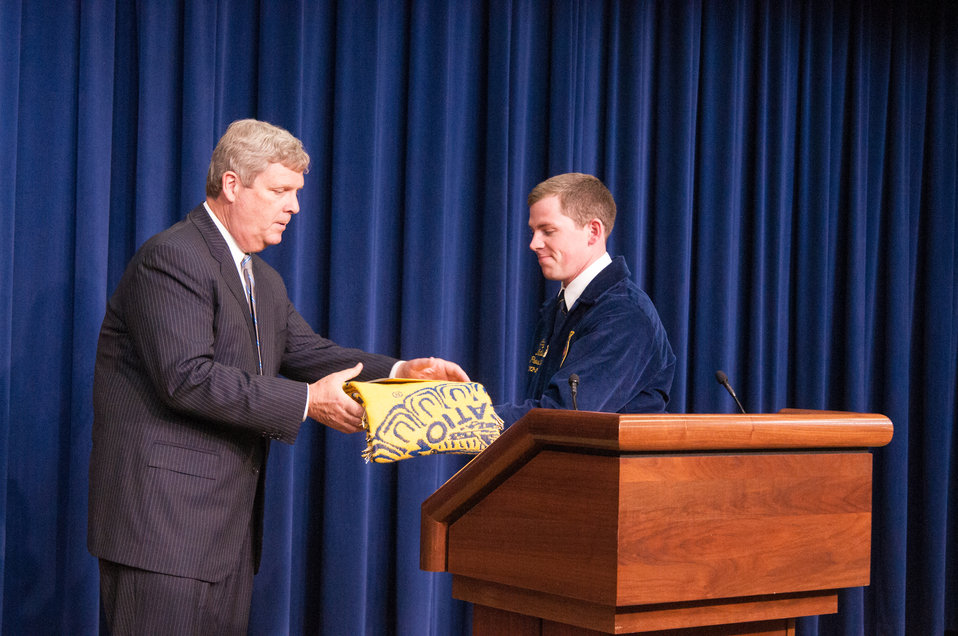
Agriculture Secretary Tom Vilsack accepts a token of appreciation from FFA National President Clay Sapp (FL) at a meeting of the White House Rural Council on Wednesday, Jul. 24, 2013 in Washington, D.C. Secretary Vilsack took questions from the audience and discussed international, national and agricultural production topics with the FFA State President’s while in Washington for their State Presidents Conference.